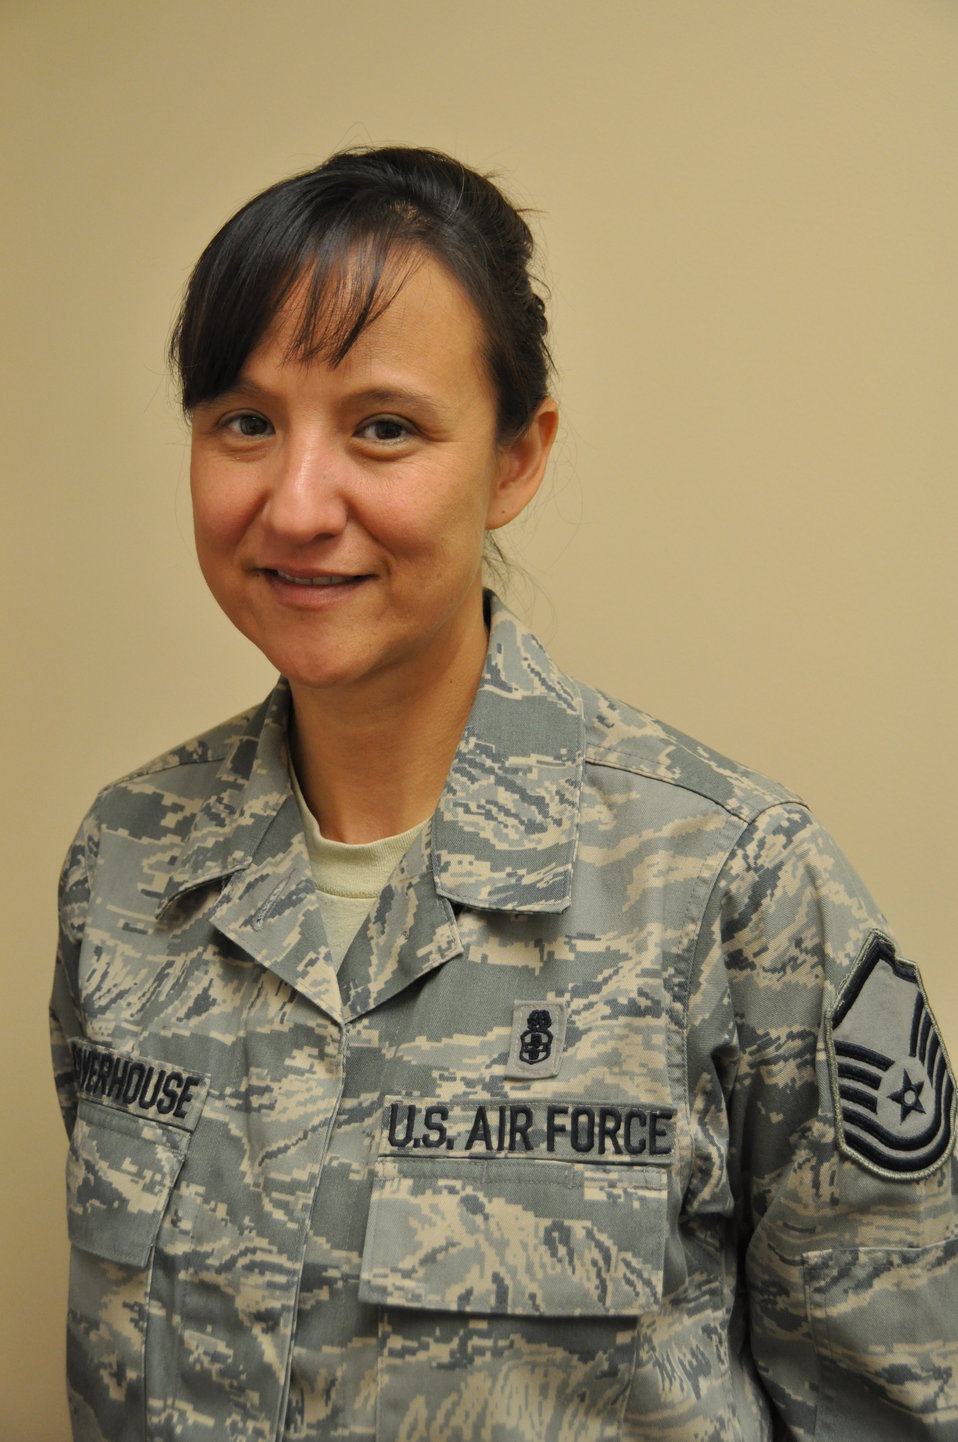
Through Airmen's Eyes: The way back home

Master Sgt. Nicole Culverhouse, 60th Medical Support Squadron element chief, was recently reunited with her family almost four decades after she was kidnapped as a child in Bogota, Colombia.